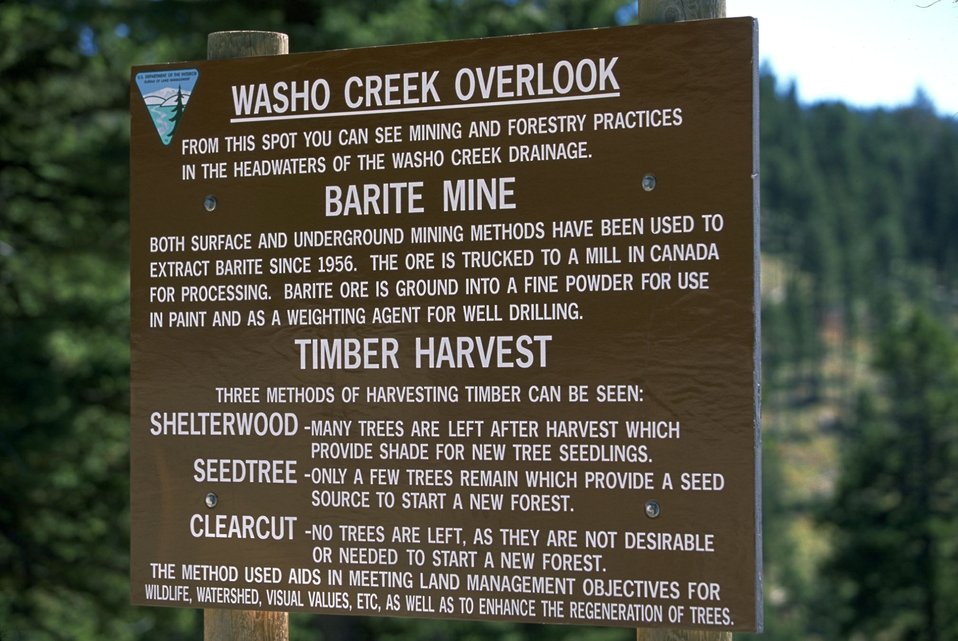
Garnet Back Country Byway--interpretive sign at reclaimed barite mine